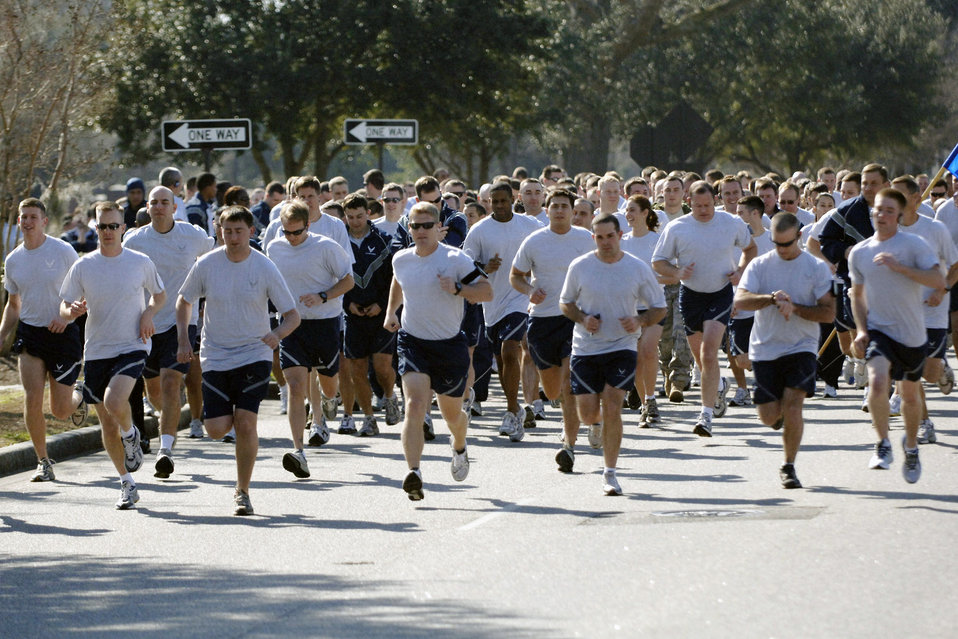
Keeping fit

Airmen start the Commander's Fitness Challenge 5,000-meter run Feb. 6 on Charleston Air Force Base, S.C. More than 400 Airmen from various squadrons came out to participate in the monthly challenge.